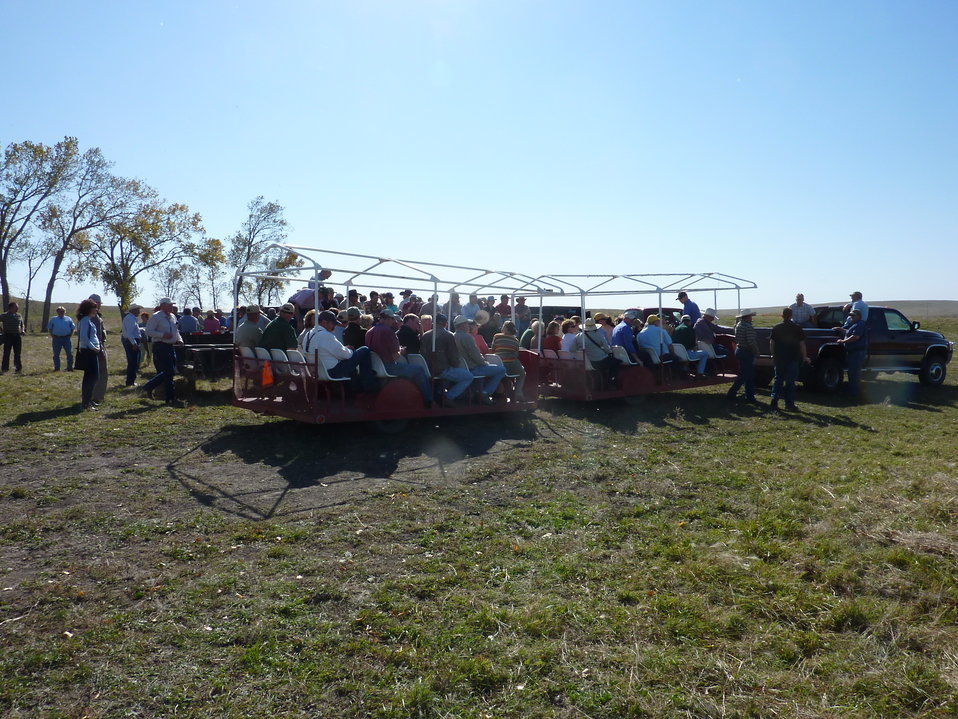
Private Lands Day

South Dakota